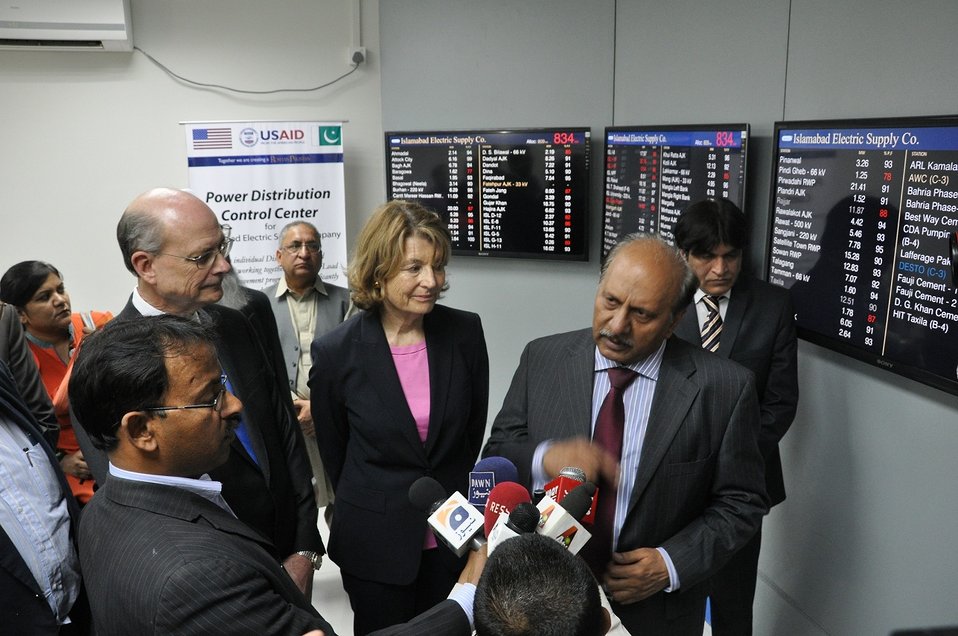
U.S. Improves IESCO’s ability to Reduce Unscheduled Load Shedding

Nancy Estes, Acting Mission Director, United States Agency for International Development (USAID), and Yousaf Awan, Chief Executive Officer, Islamabad Electric Supply Company (IESCO), briefing the media.